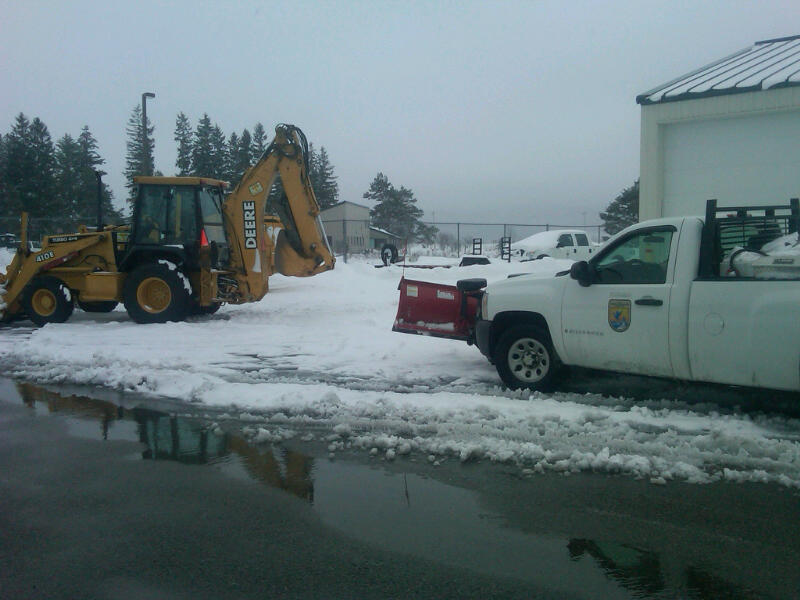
Hurricane Sandy snows at Canaan Valley National Wildlife Refuge (WV)

AfterHurricane Sandy dumped over two feet of snow at Canaan Valley National Wildlife Refuge, the refuge signed a mutual aid agreement with the Tucker County Office of Emergency Management to assist with snow removal and fueling of trucks and generators.